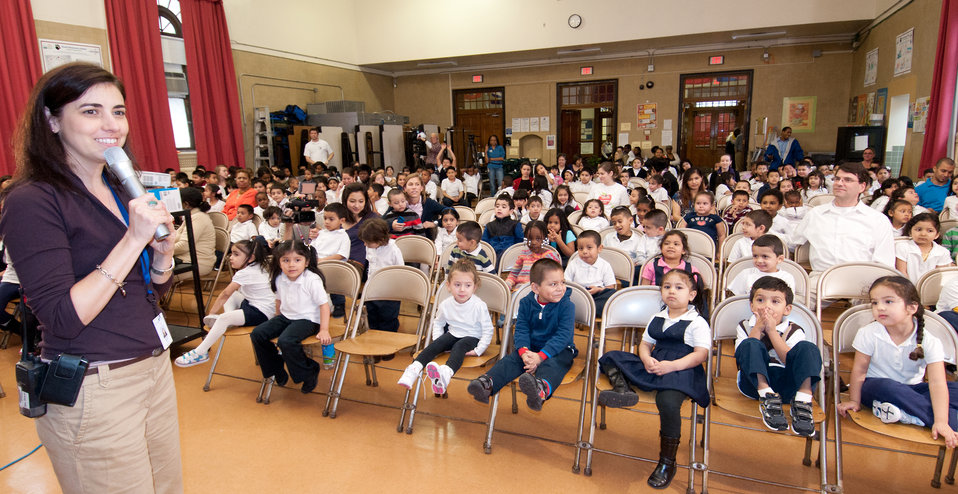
Principal Janeece Docal, applauded and praised the work of The People’s Garden team for W. B. Powell Elementary School, (consisting of the Washington Capitols, U.S. Department of Agriculture and D.C. Public Schools in Washington, D.C.) who revealed to 289 parents and students, the School Garden Design Concept on Thursday, March 10, 2011. The design draft was created by Forest Service landscape architect Matt Arnn, with the support of Natural Resources Conservation Service landscape architect Bob Sneickus, Outreach and Education Coordinator Annie Ceccarini and Project Manager Leslie Burks who worked with the school during an earlier visit to develop illustrated ideas from parents and students. Representing the Washington Capitols is Defenseman, Number: 52 Mike Green, Comcast SportsNet Analyst Alan May and Director of Community Relations Elizabeth Wodatch.